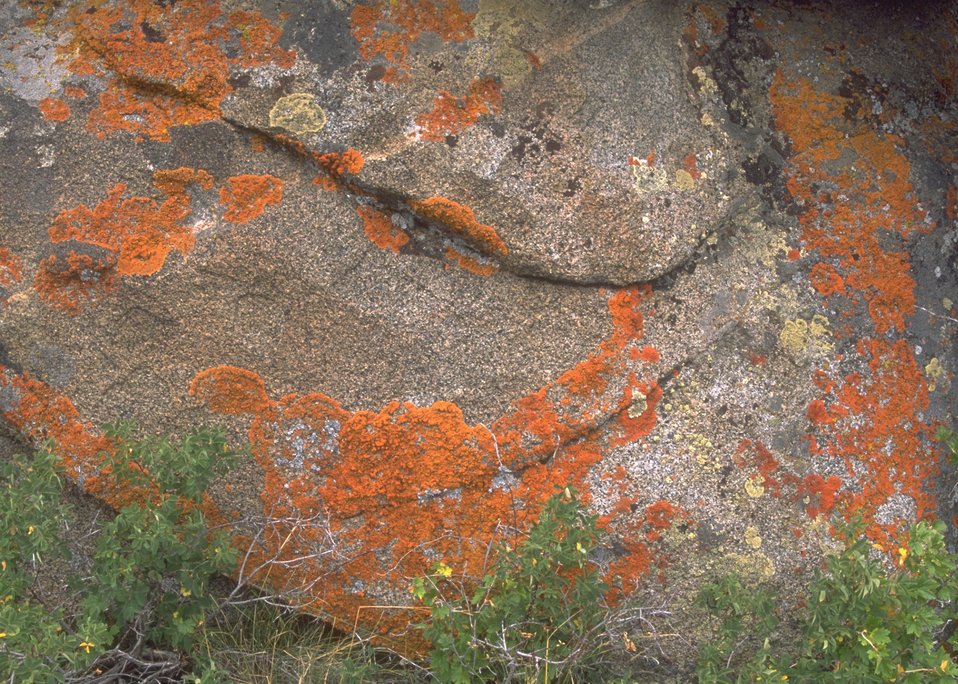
Lichen at Sweetwater Bridge Campground, Rock Springs Field Office.